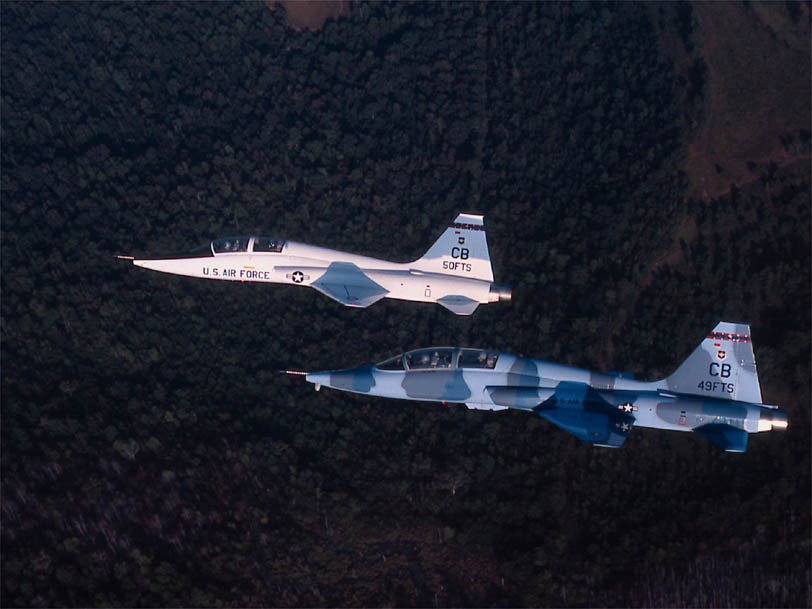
AT-38B

1990's -- Air Education and Training Command flys the modified version of the T-38, the AT-38B, to prepare pilots for fighter aircraft such as the F-15, F-16 and A-10. This model carries external armament and weapons delivery equipment for training.